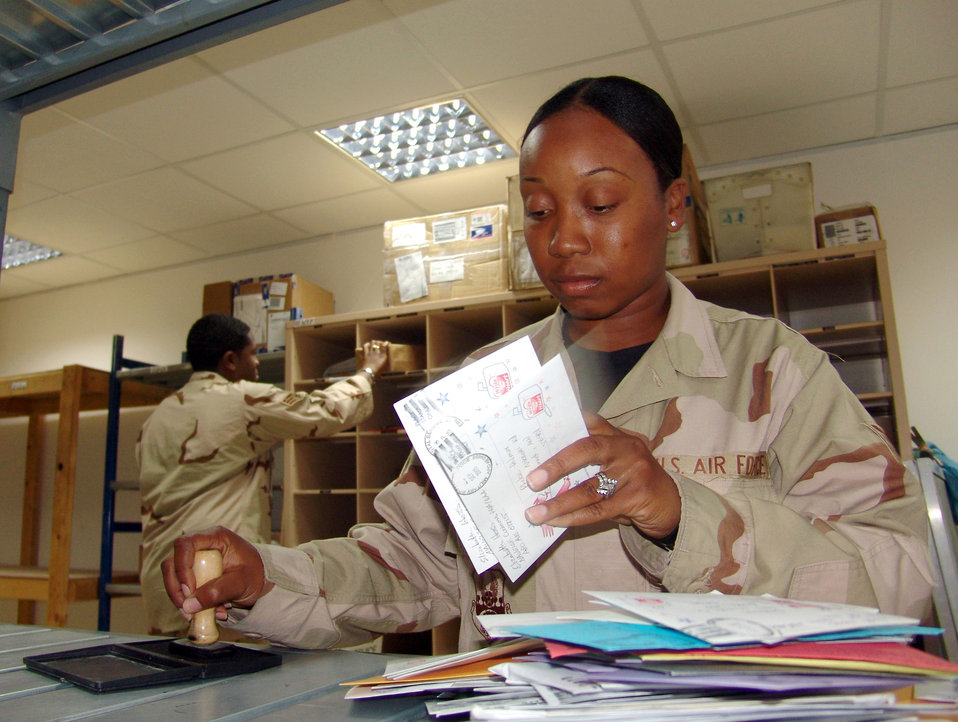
Stamp of approval

SOUTHWEST ASIA -- Staff Sgt. Sherika Dyer stamps postage marks on letters destined from here. Sergeant Dyer is deployed to the 386th Expeditionary Communications Squadron from Yokota Air Base, Japan. The 386th Air Expeditionary Wing's primary mission is to provide C-130 Hercules combat airlift for Operations Iraqi Freedom and Enduring Freedom.